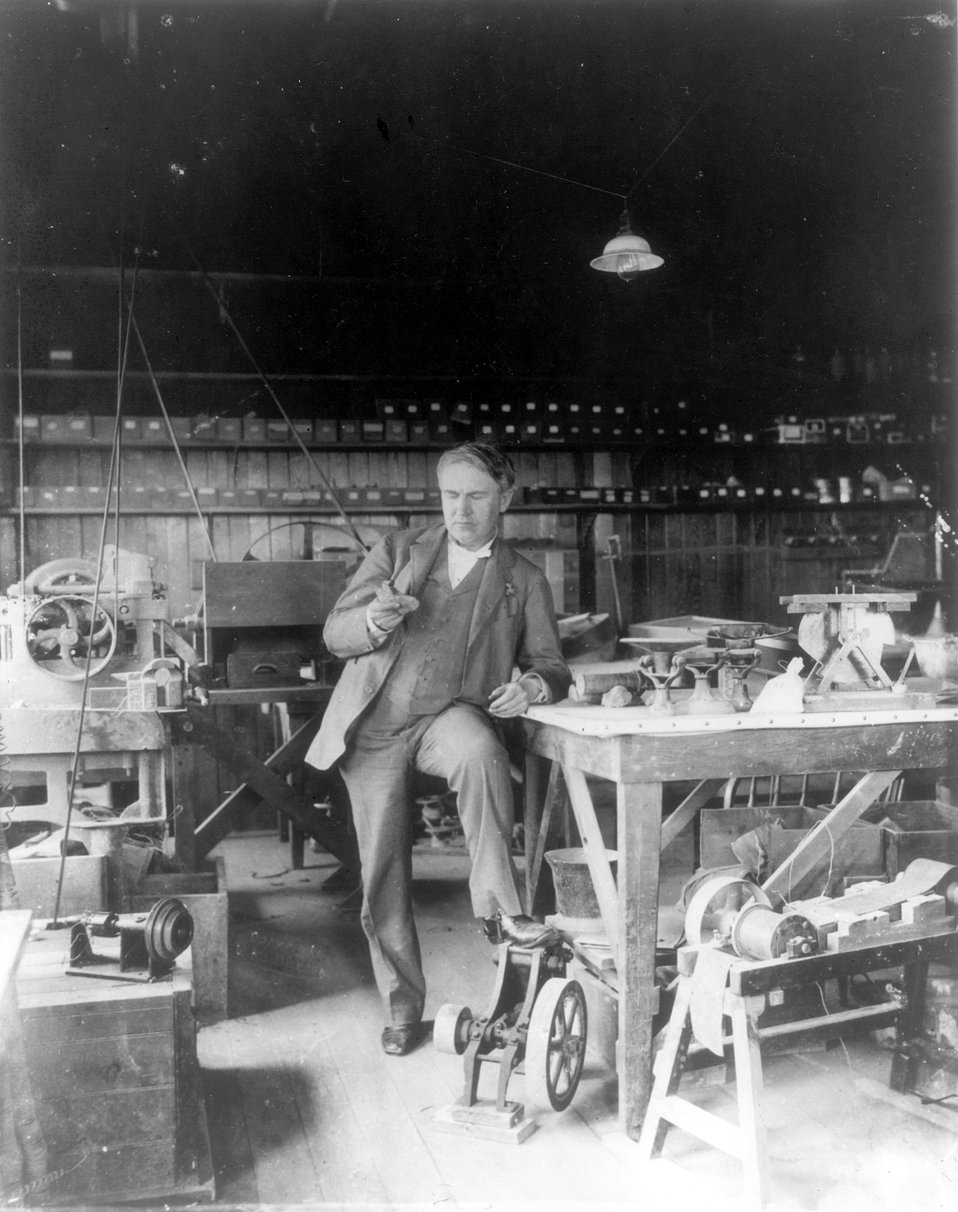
T.A. Edison in his lab.